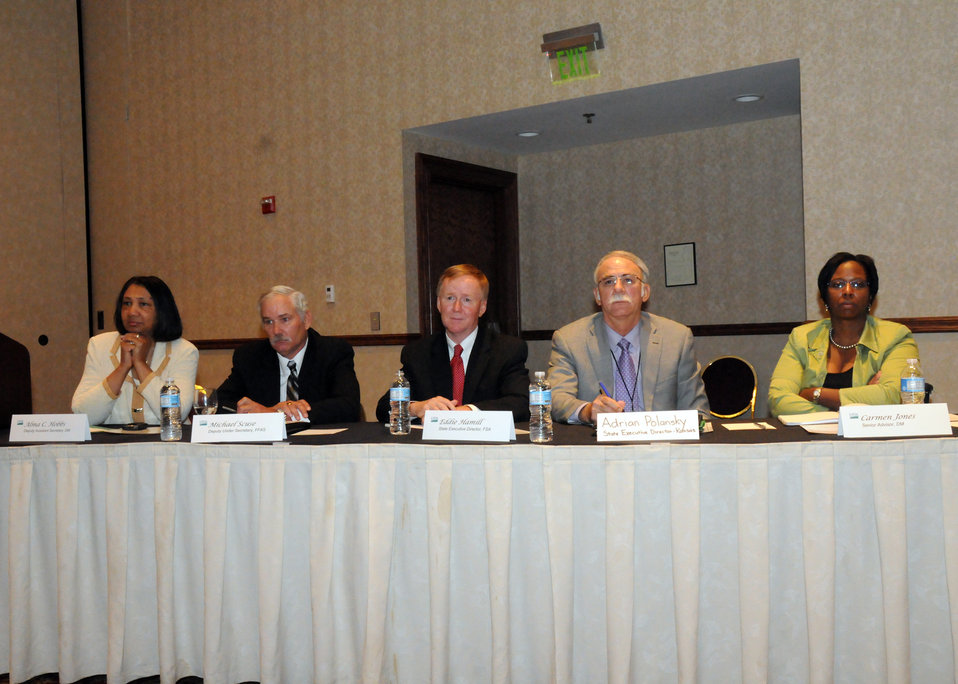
A panel of U.S. Department of Agriculture officials listen to employees at the Cultural Transformation Employee listening session held in Kansas City, MO, on Wednesday, April 14, 2010. USDA employees expressed their concerns with issues at the Department and made suggestions for correcting them and improving the image of USDA. (Seated L to R Deputy Assistant Secretary for Department Management Alma Hobbs, Deputy Under Secretary for Farm and Foreign Agricultural Service Michael Scuse, State Executive Director for Farm Service Agency Eddie Hamill, State Executive Director Kansas Adrian Polansky, and Senior Advisor for Department Management Carmen Jones) USDA photo 10di1308-107.